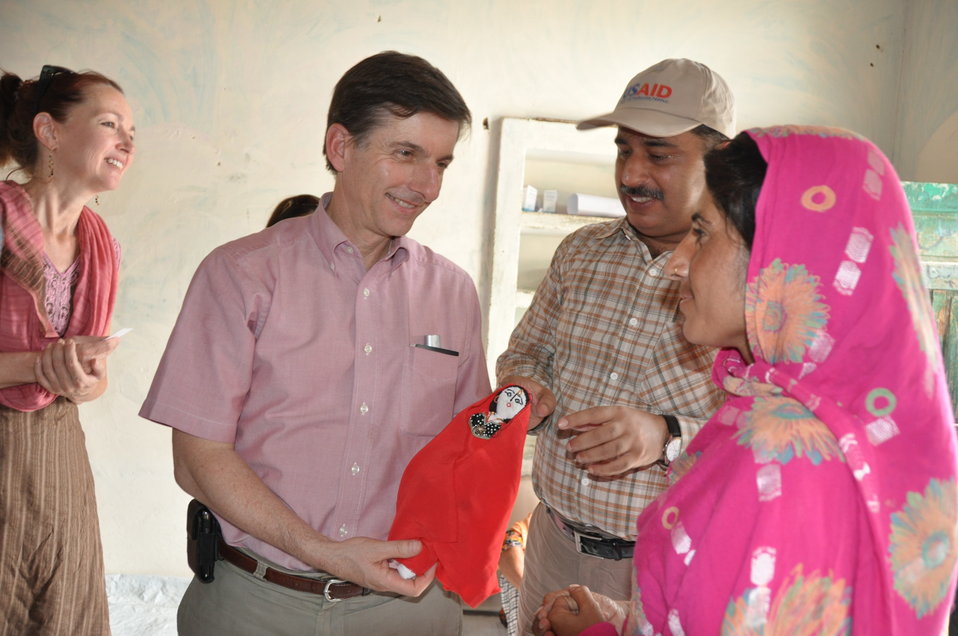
USAID Gender Equity Program